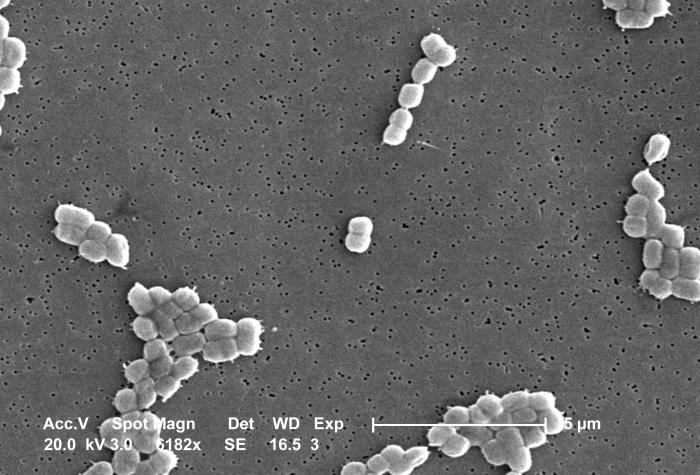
This SEM depicts a number of clusters of aerobic Gram-negative, non-motile Acinetobacter baumannii bacteria under a magnification of 6,182x.